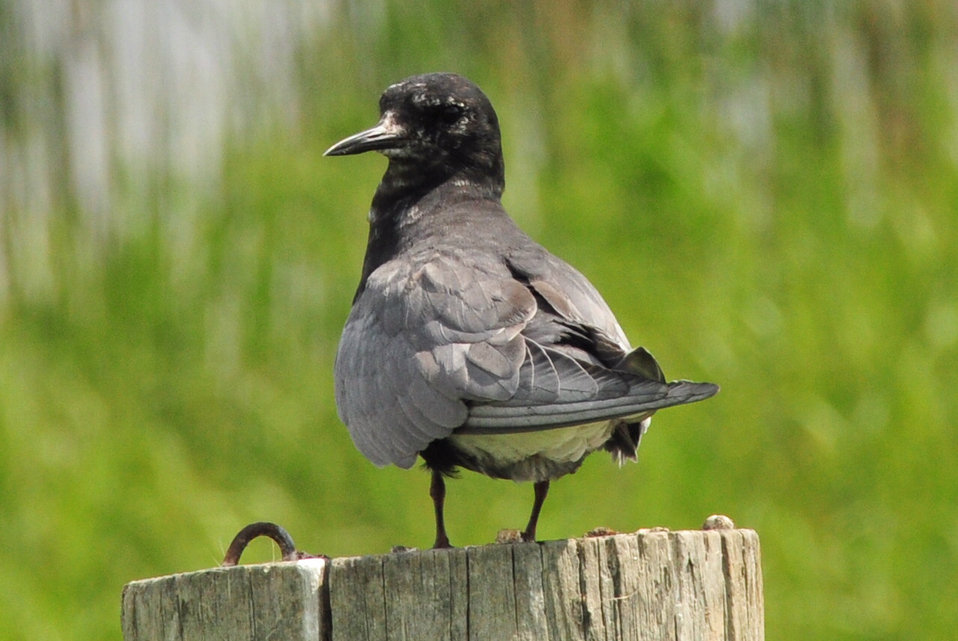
Black Tern Lacreek NWR